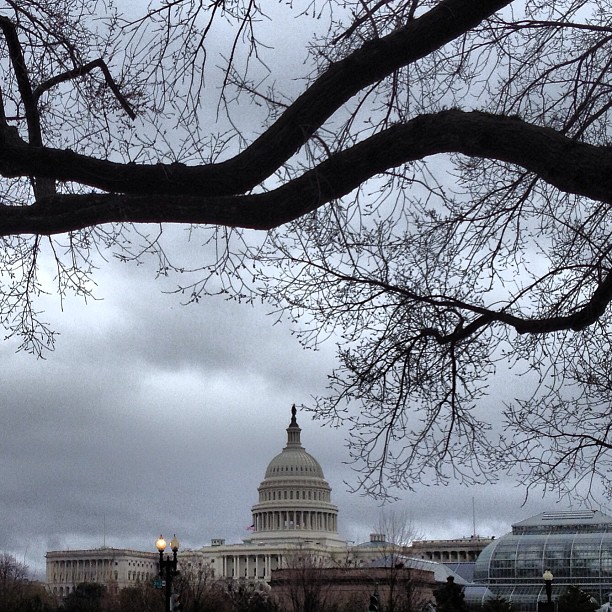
Rainy morning on Capitol Hill. #dc